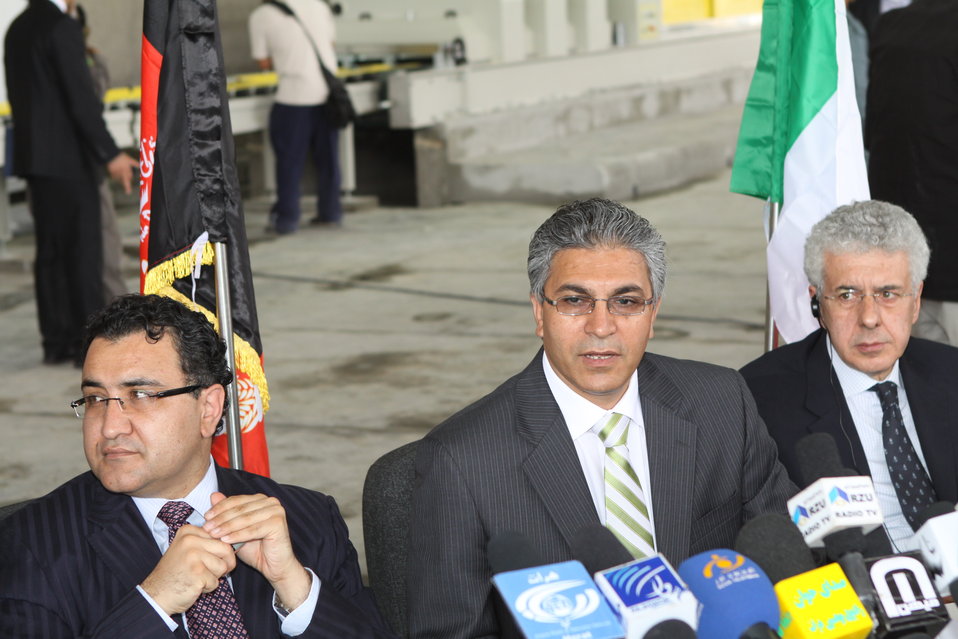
100525 Hirat Marble Conference 333